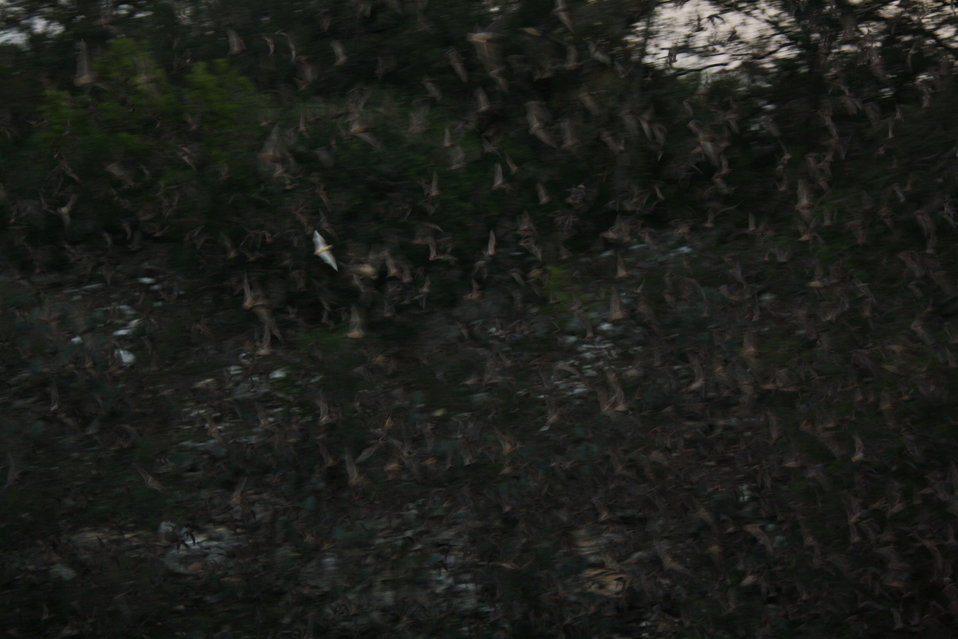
Albino Mexican free-tailed bat exiting Bracken Bat Cave

Can you spot the albino bat among the many Mexican free-tailed bats exiting Bracken Bat Cave?